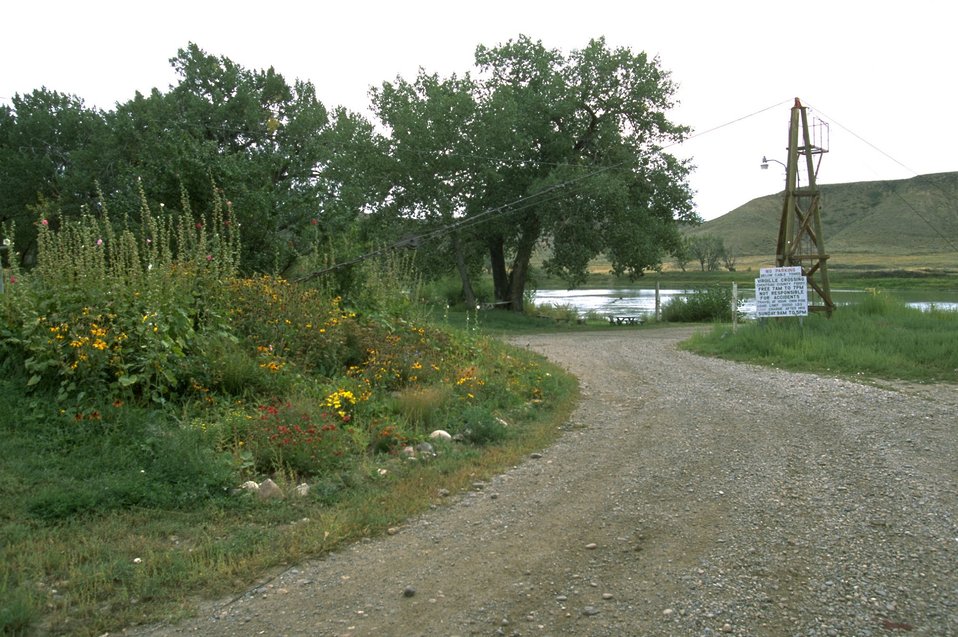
Virgelle Ferry on Upper Missouri River near Loma